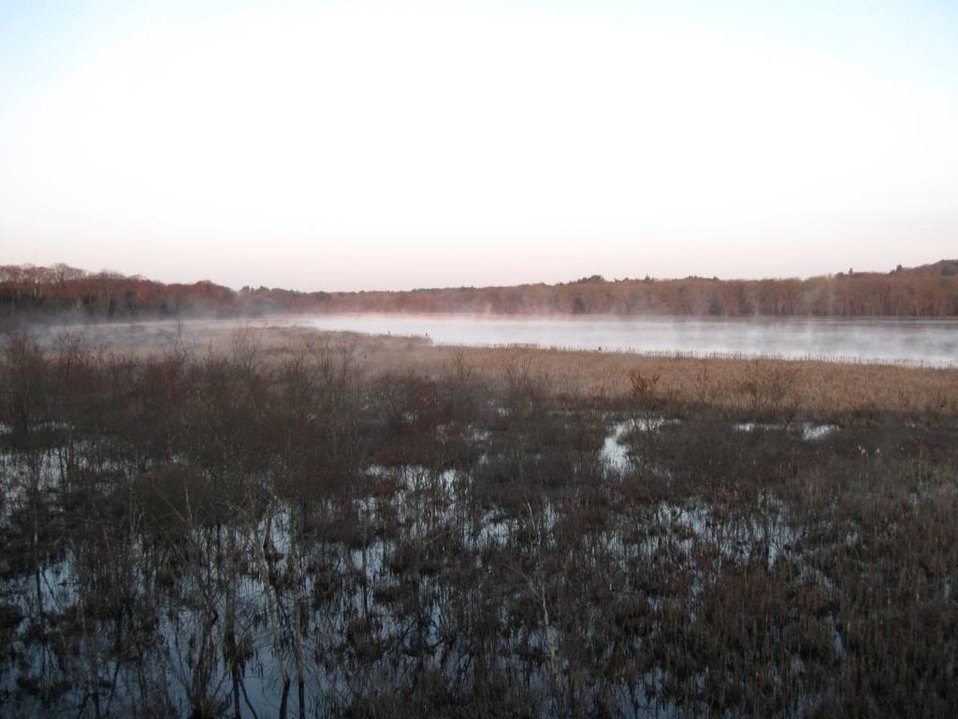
Great Meadows National Wildlife Refuge

Credit: Zachary Cava/USFWS

Great Meadows National Wildlife Refuge is part of the Eastern Massachusetts National Wildlife Refuge Complex.